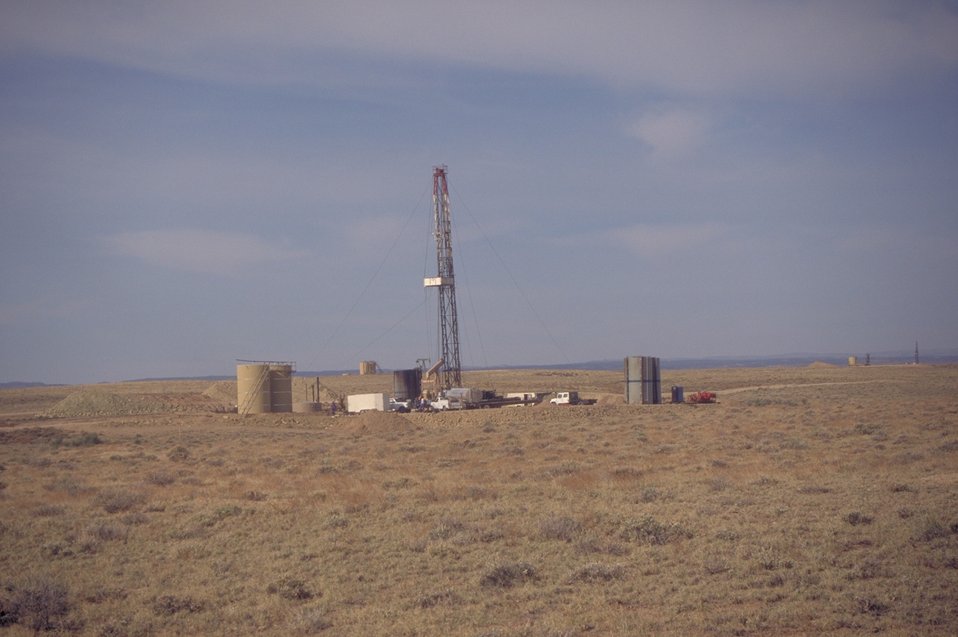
Drilling for coal bed methane near Price, Utah.